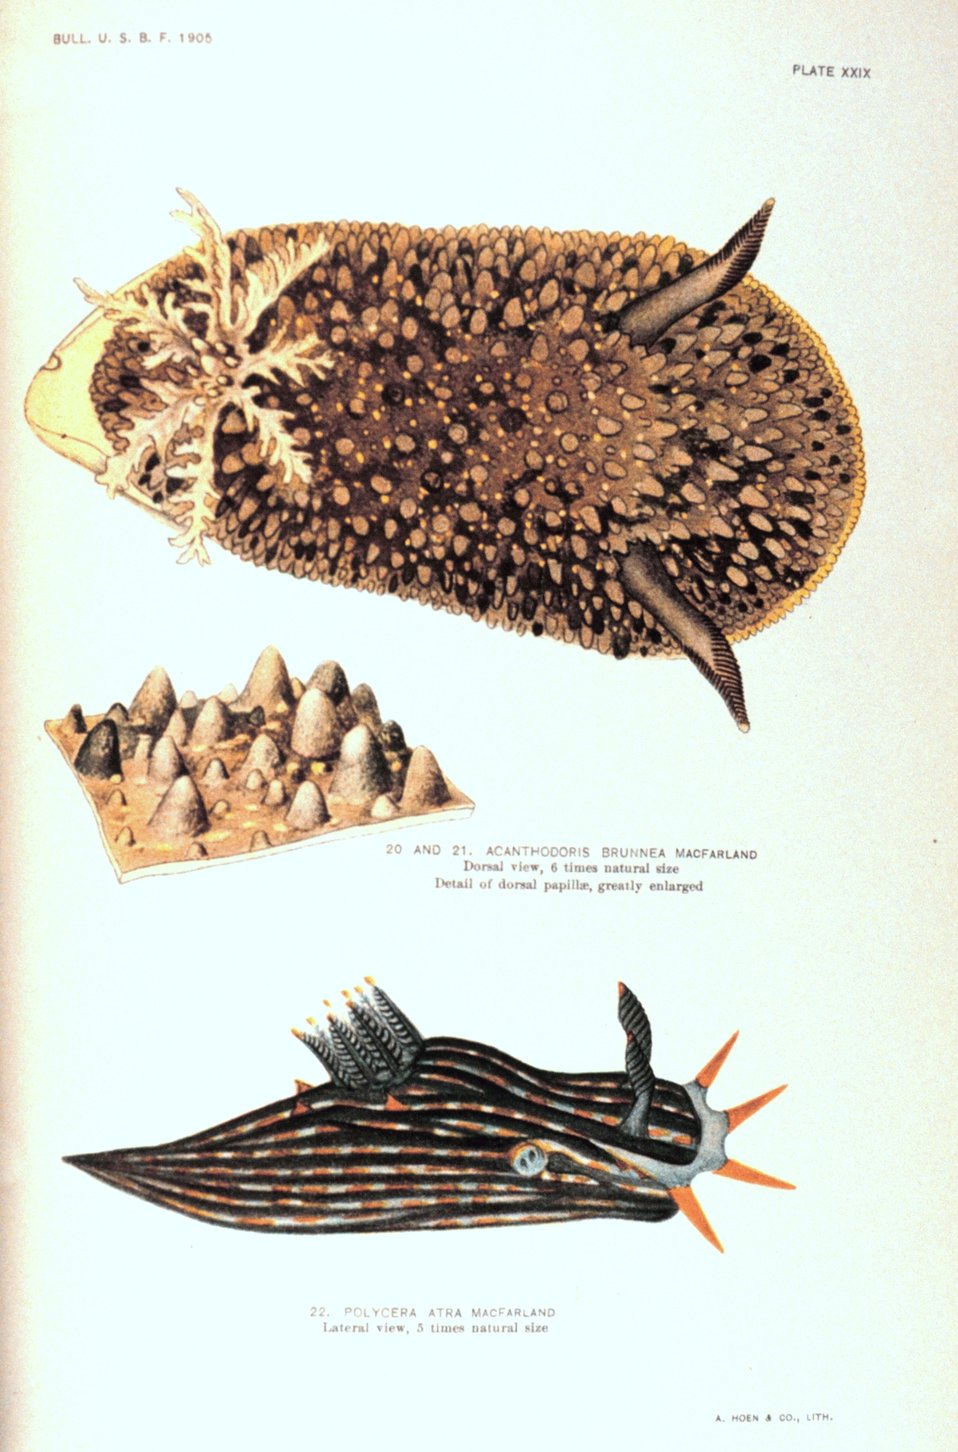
Nudibranchs. 20 and 21. Acanthodoris brunnea MacFarland -Dorsal view and detail of dorsal papillae. 22. Polycera atra MacFarland - lateral view. 20 and 21 painted by Anna B. Nash of the Hopkins Seaside Laboratory. In: 'Opisthobranchiate Mollusca from Monterey Bay ....', Bulletin of the Bureau of Fisheries, Volume 25, 1905. P. 151, Plate XXIX.